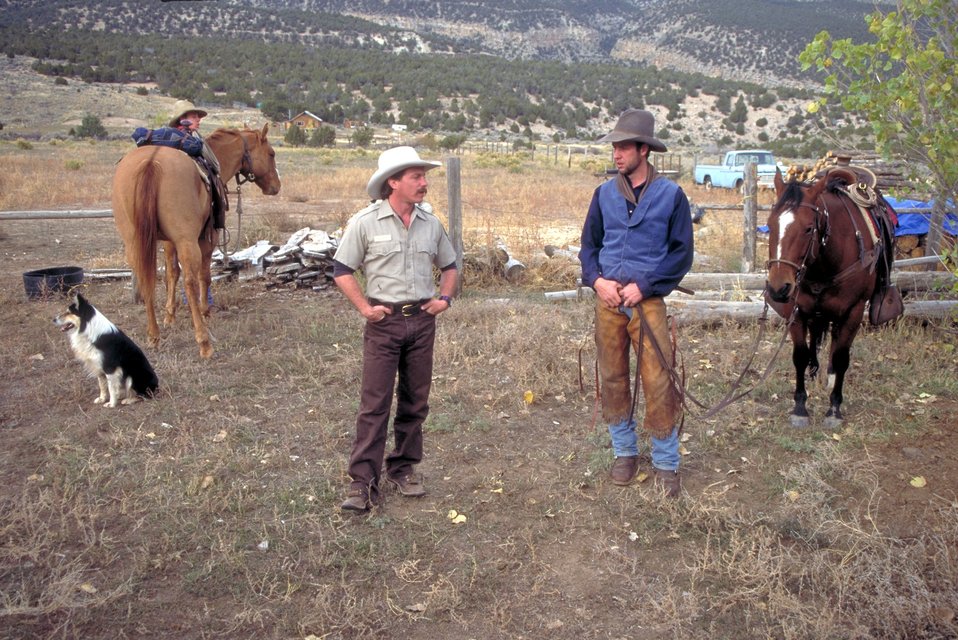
Working cowboys living near Vernal, Utah.